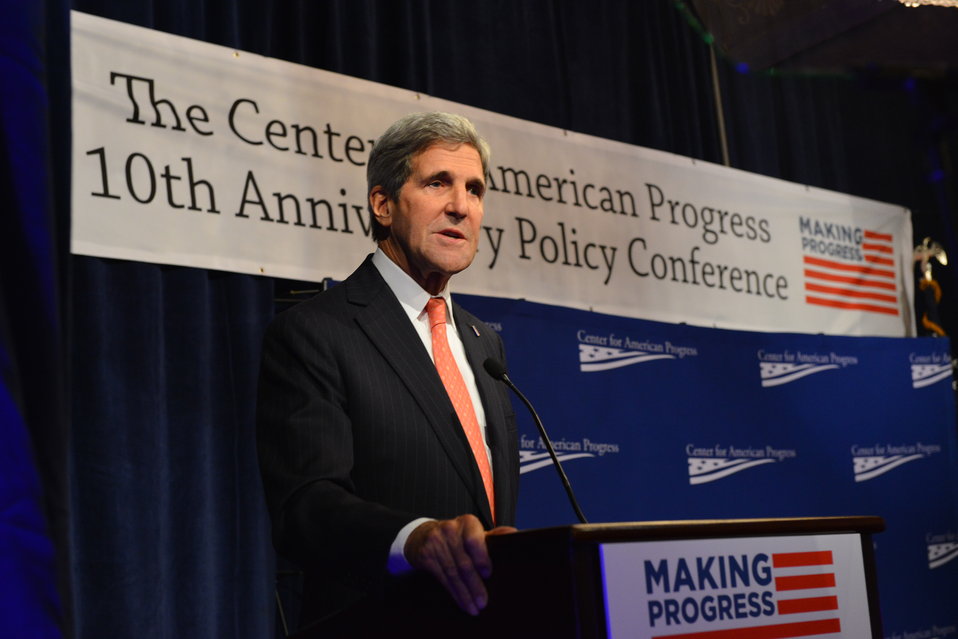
Secretary Kerry Delivers Remarks at the Center for American Progress

U.S. Secretary of State John Kerry delivers remarks at the Center for American Progress’ 10-year Anniversary Policy Conference in Washington, D.C., on October 24, 2013.